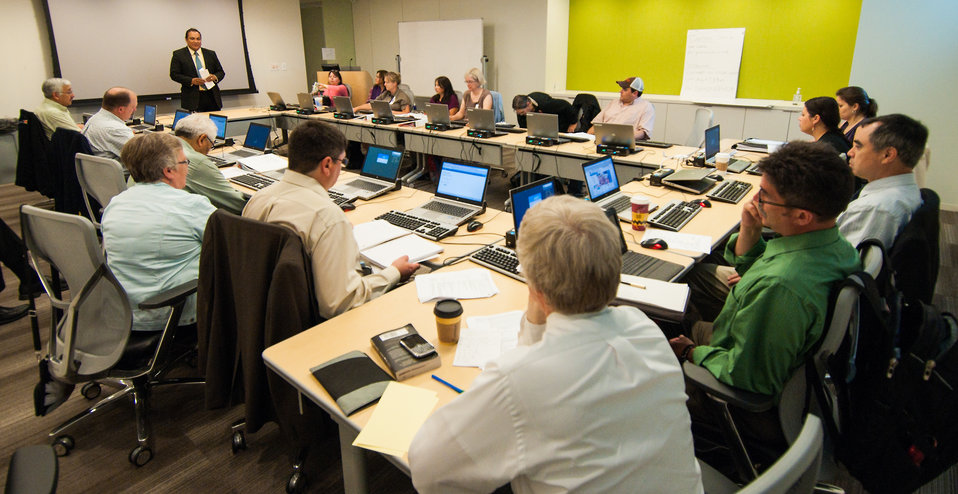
U.S. Department of Agriculture (USDA) 1994 Tribal Land Grant College's and University's Program Director Lawrence Shorty offers opening remarks at the USDA 2013 Land-Grant Development Tribal Fellows Program held in Washington, D.C. on Monday, Jun. 03, 2013.